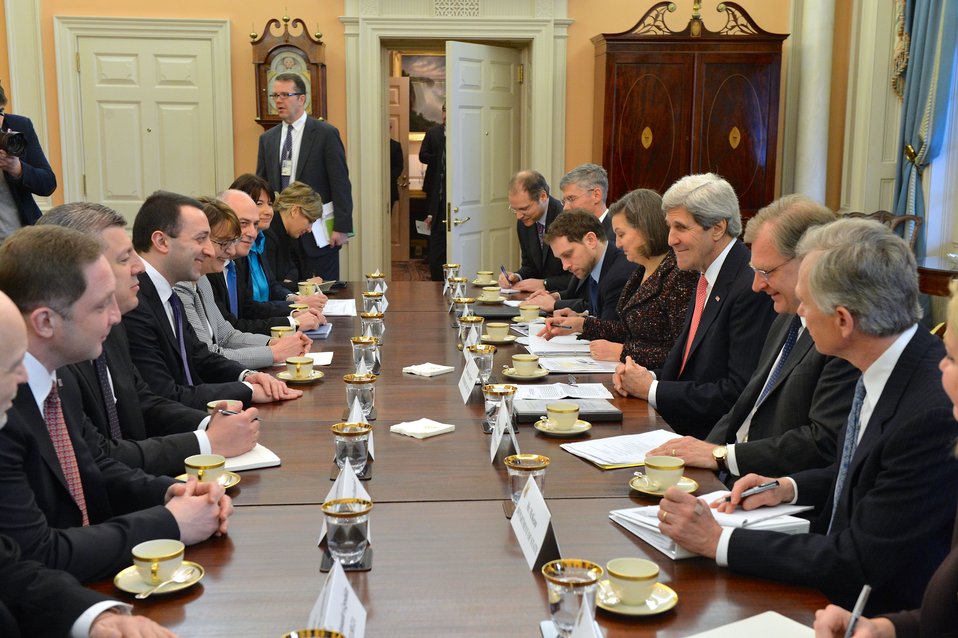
Secretary Kerry Meets With Georgian Prime Minister Garibashvili

U.S. Secretary of State John Kerry meets with Georgian Prime Minister Irakli Garibashvili at the U.S. Department of State in Washington, D.C., on February 26, 2014.